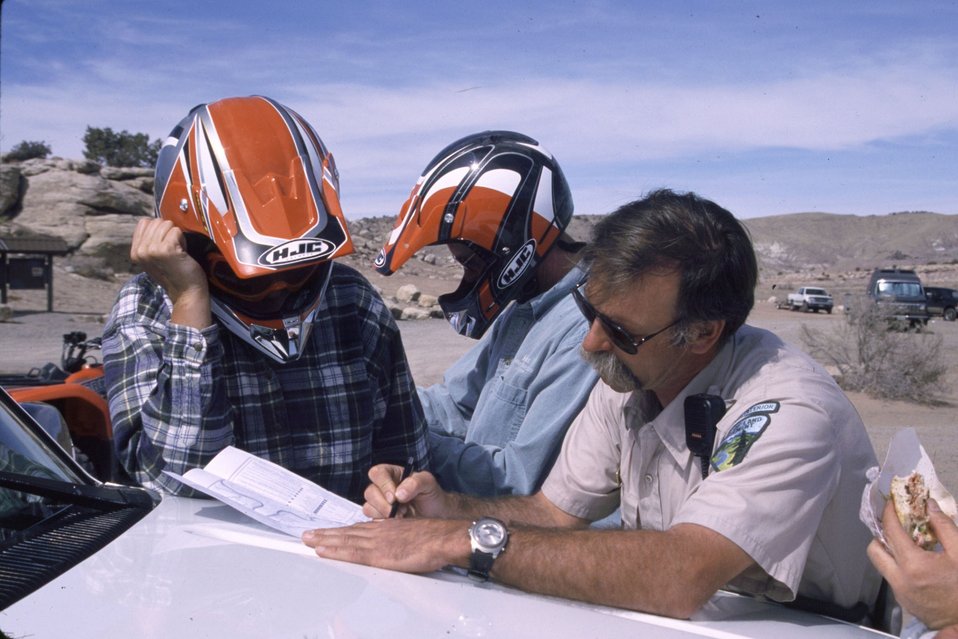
BLM Assistance